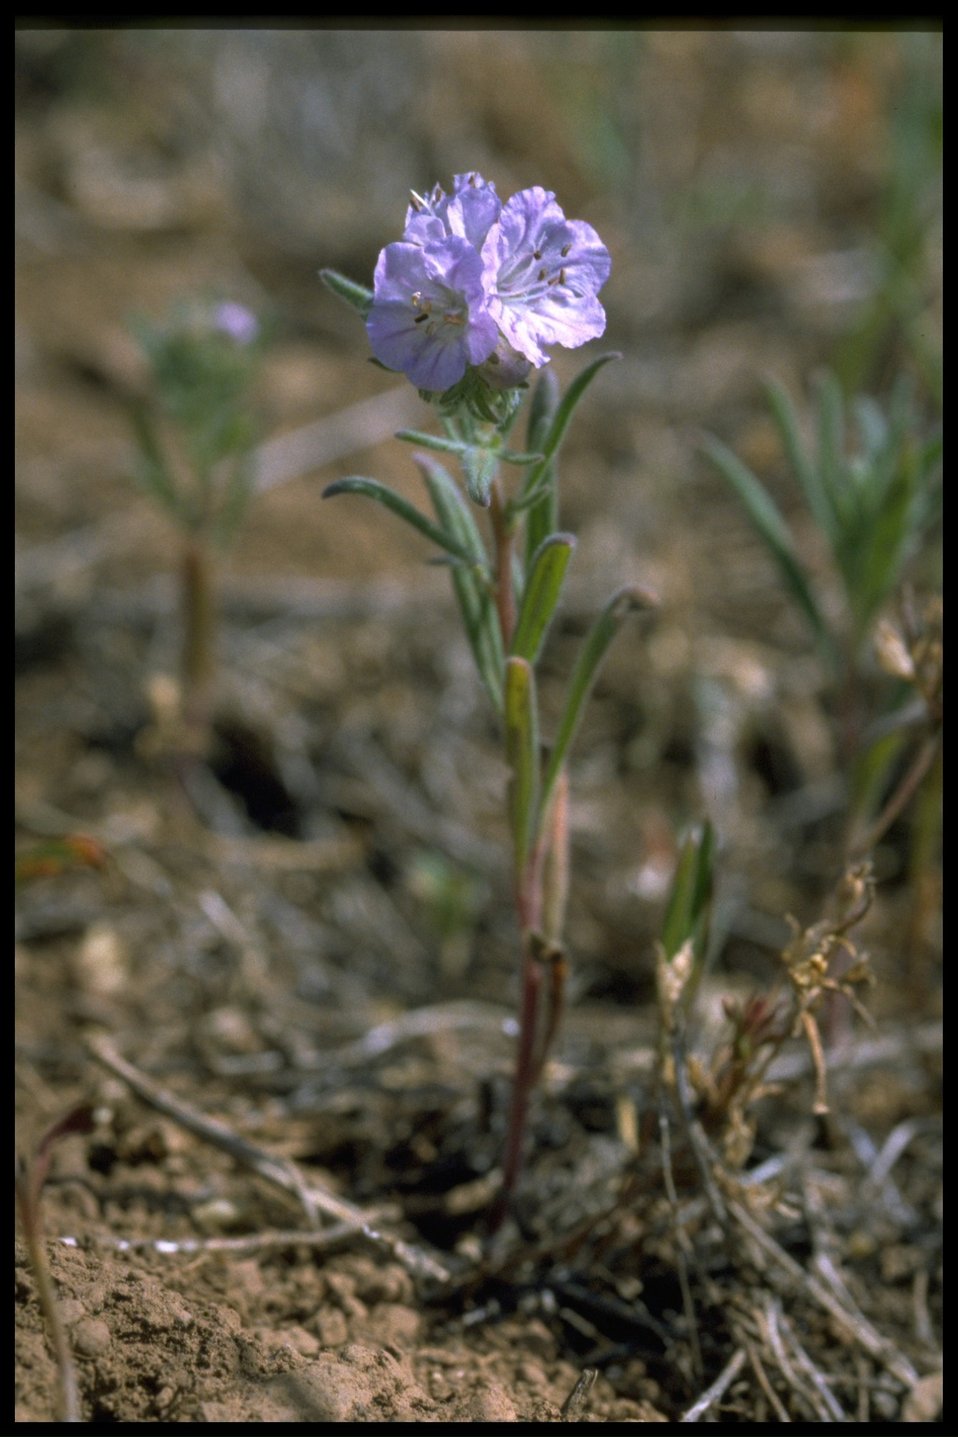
Medium shot of Linear-leaf Phacelia wildflower.